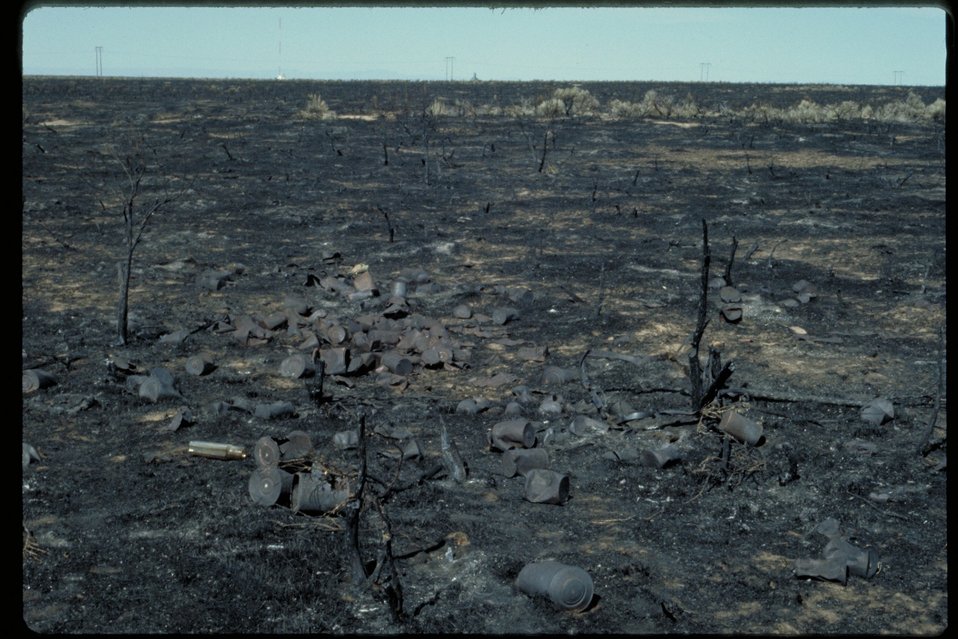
Oregon Trail Dump west of Alkali Creek Lower Snake River District